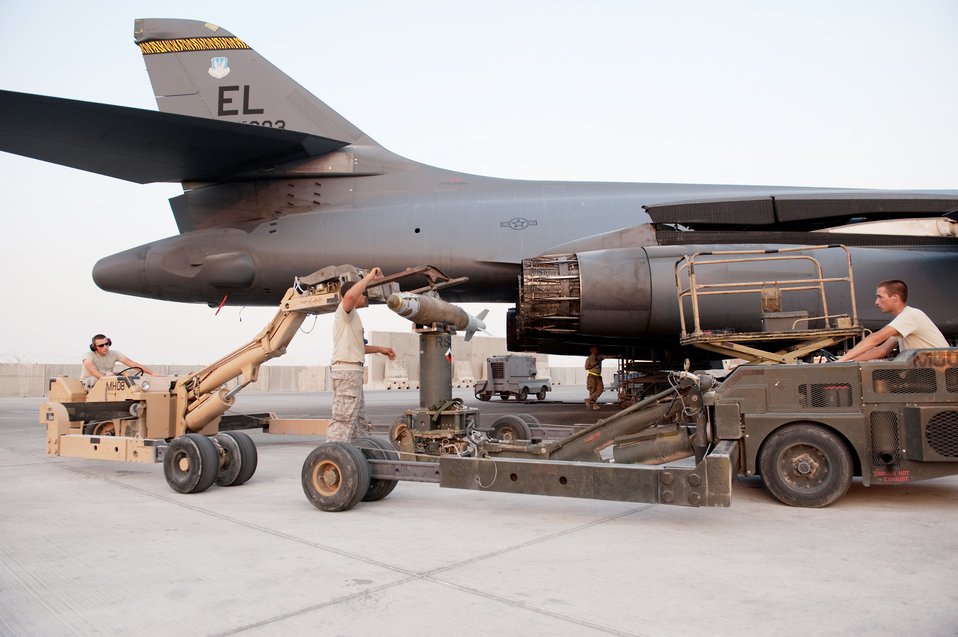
Checking out the B-1B for combat

Airmen 1st Class Michael Huber (from left), Phillip Rhinehart and Matthew Beard load GBU-38s onto a B-1B Lancer Nov. 11, 2009, at an air base in Southwest Asia. The Airmen are deployed with the aircraft from Ellsworth Air Force Base, S.D., in support of operations Iraqi Freedom and Enduring Freedom.